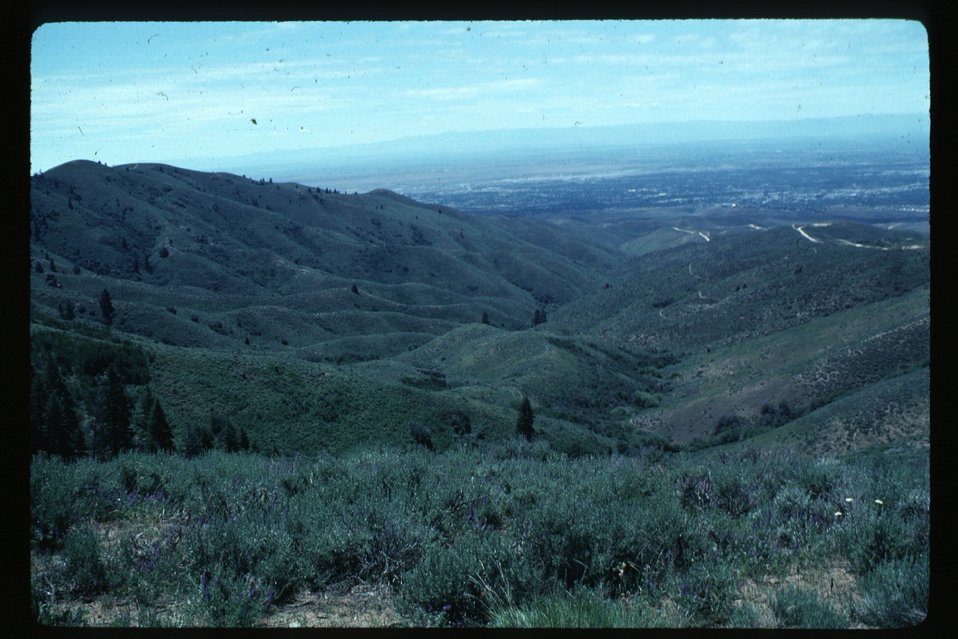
Hulls Gulch with Boise in background Boise Foothills Boise Front Four Rivers Field Office LSRD Lower Snake River District